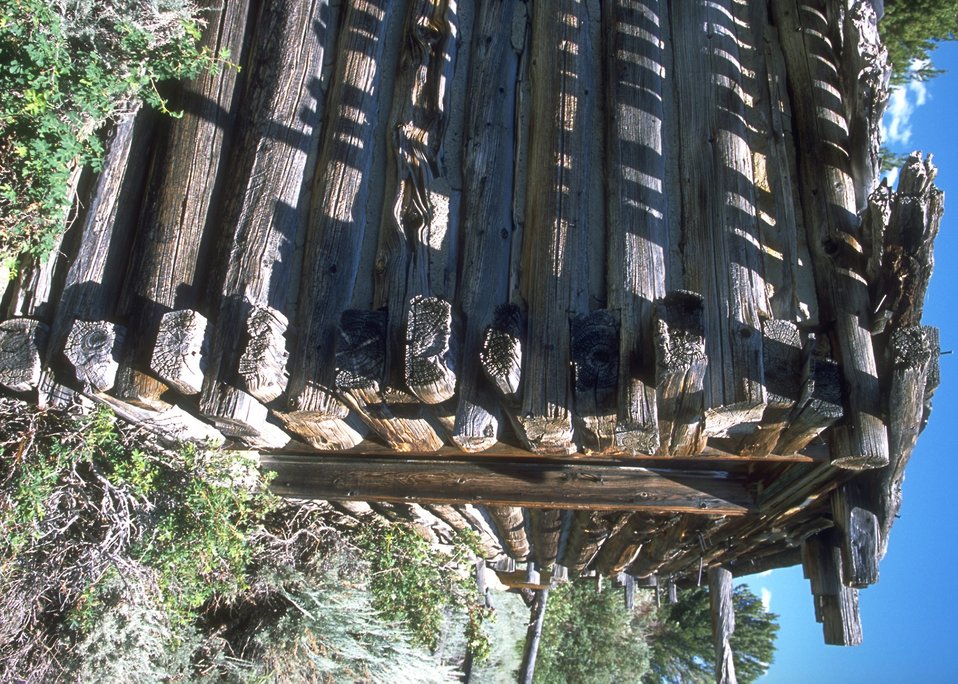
Wall and corner detail on cabin north of South Pass City along the Continental Divide Trail, Lander Field Office.